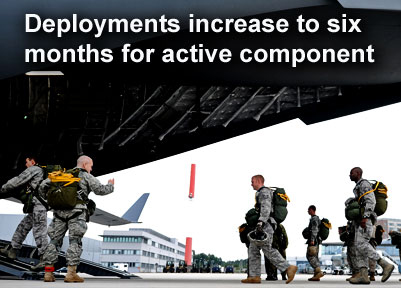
Deployments Increase